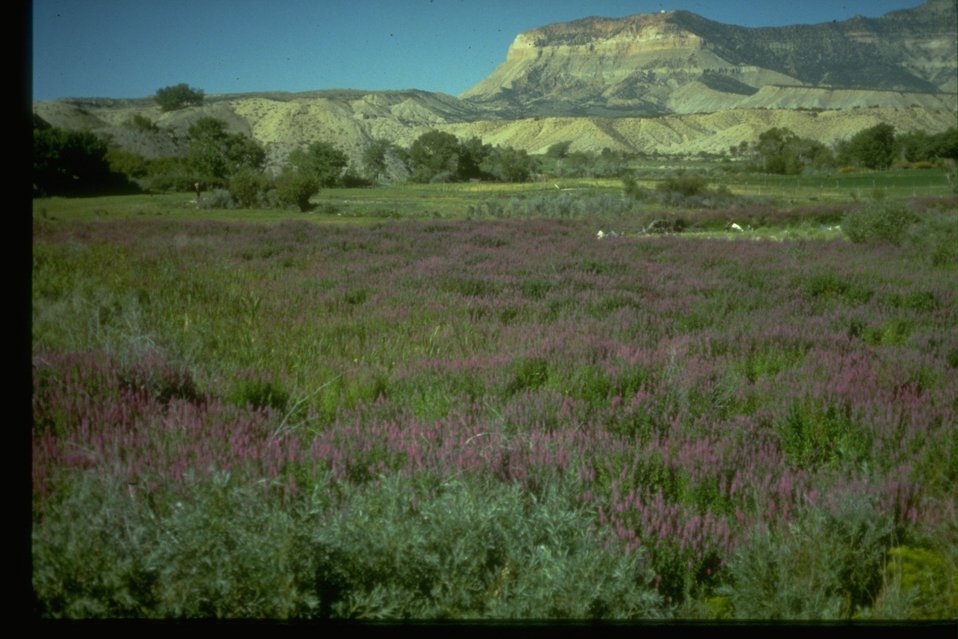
Expanse of Purple Loosestrife.